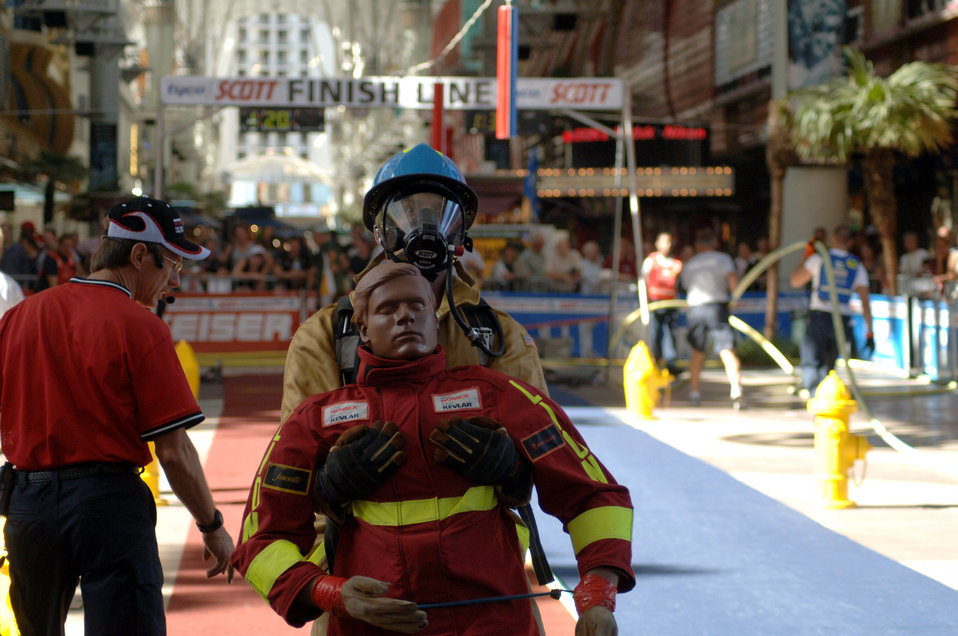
World Firefighter Combat Challenge

Air Force Academy firefighter Staff Sgt. Danny Arens digs deep to tug a 175-pound rescue dummy across the finish line during the final event of the World Firefighter Combat Challenge XVI in Las Vegas. The firefighter combat challenge events are so physically demanding that firefighters run the course only once a day. Sergeant Arens and his Academy teammates are one of several military firefighter teams competing.